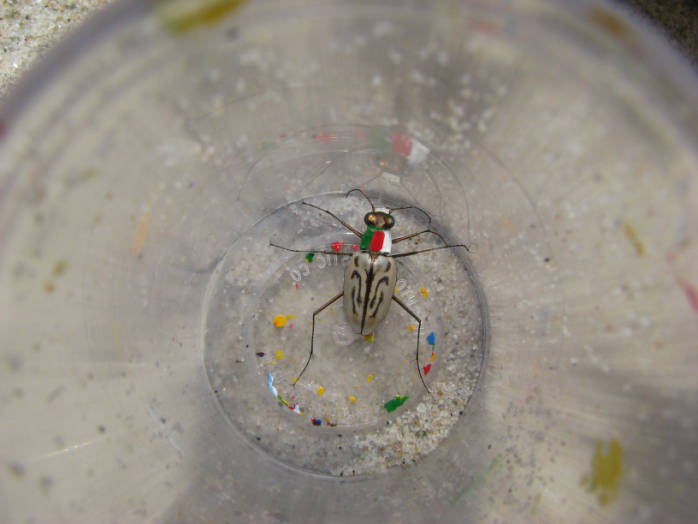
Northeastern beach tiger beetle in a jar marked with green, red, and white paint.